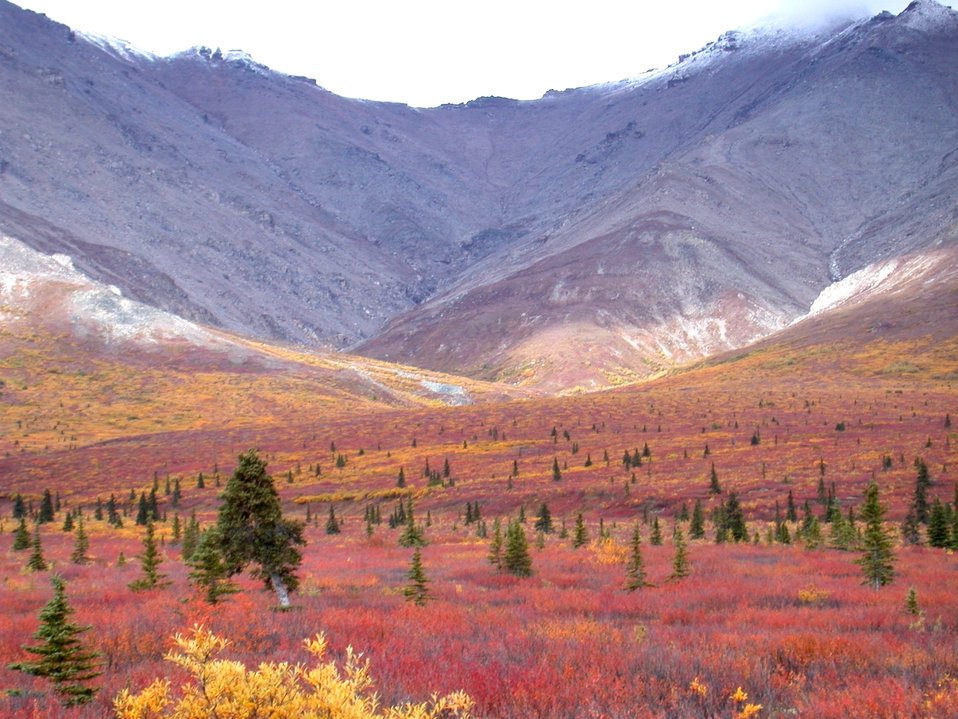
Near the tree line at higher elevations with fall colors north of Anchorage.